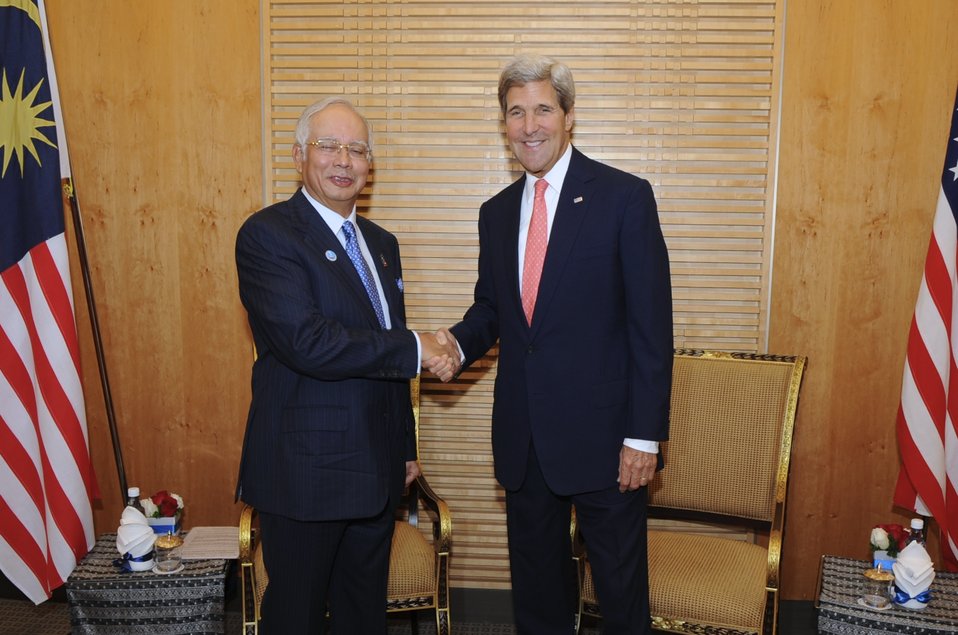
Secretary Kerry Meets With Malaysian Prime Minister Najib

U.S. Secretary of State John Kerry shakes hands with Prime Minister Najib Razak of Malaysia during a visit to Kuala Lumpur on October 11, 2013.